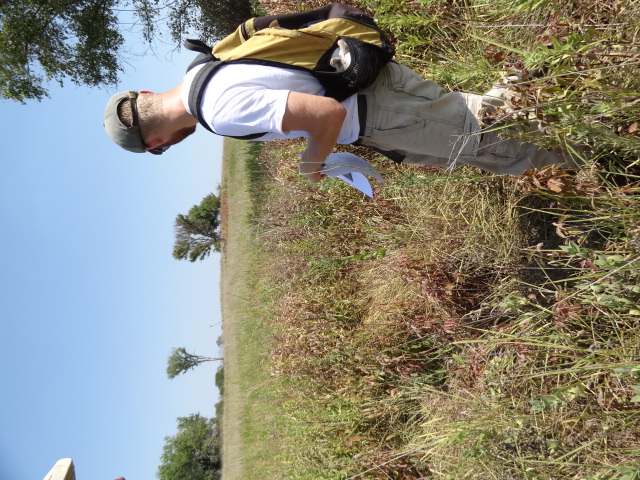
Partnerships

Marais des Cygnes NWR SCA Intern